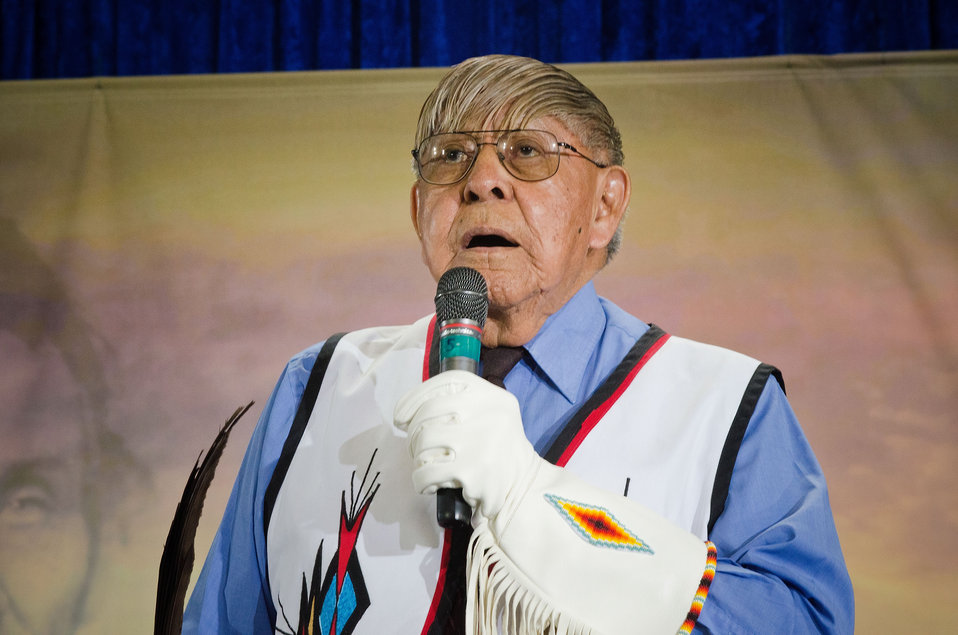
Chief Old Person of the Blackfeet Nation, Montana sings a prayer at the opening of the United States Department of Agriculture's 150th Anniversary celebration in Washington, D.C., on Tuesday, May 15, 2012.